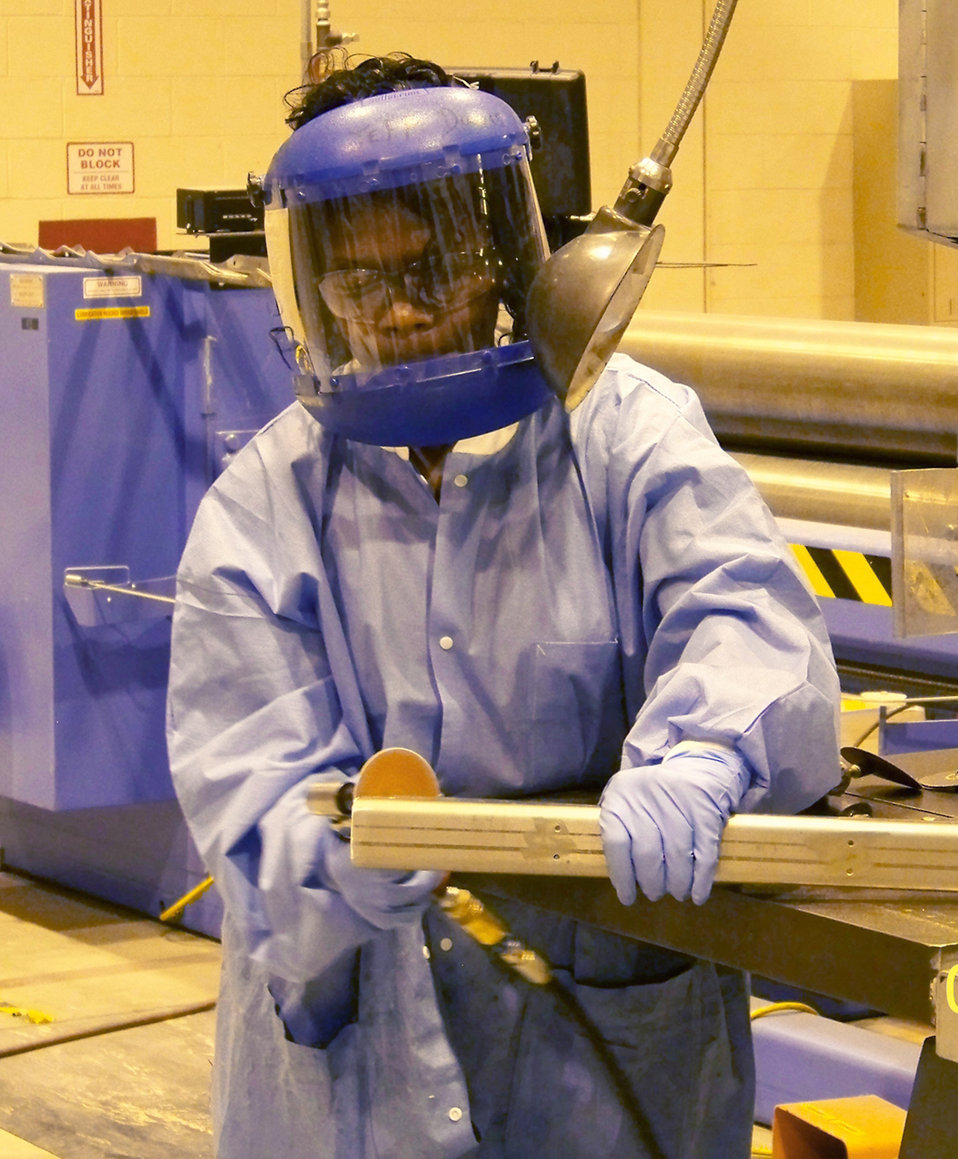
Robins unit answers urgent call for AC-130U repair

Veronica Thomas de-burrs a steel part for installation on the C-130 Hercules infrared suppression system Aug. 13 at Robins Air Force Base, Ga. Ms. Thomas is a sheet metal mechanic.